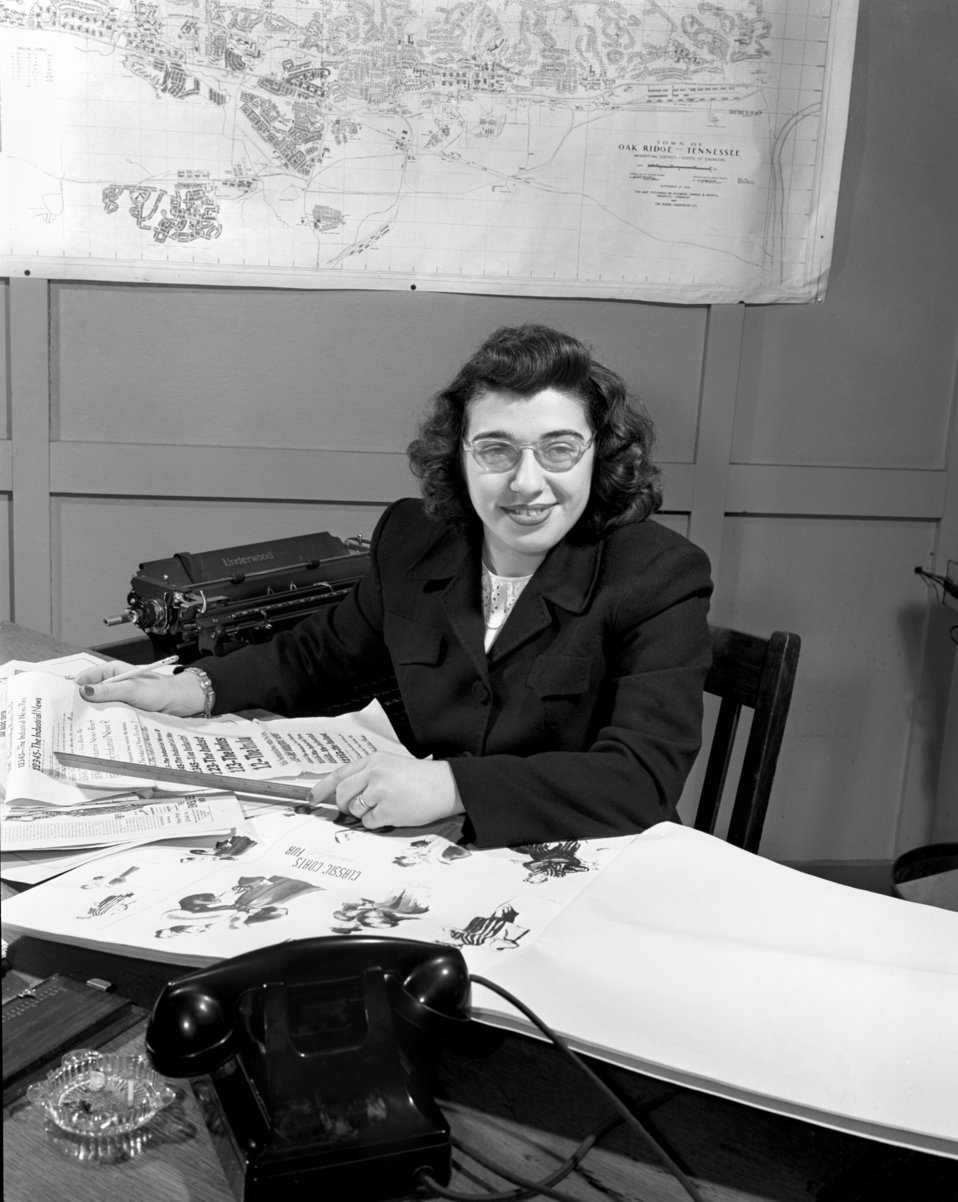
Nancy Fowler Oak Ridge 1947

3307-3 DOE photo Ed Westcott 2-20-1947 Oak Ridge Tennessee